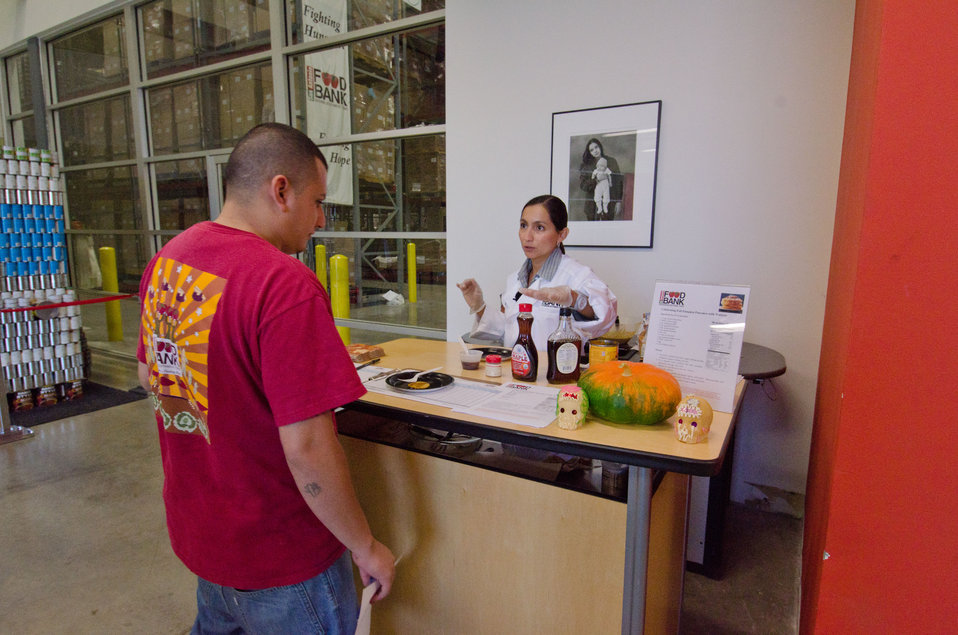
San Antonio Food Bank (SAFB) reception area, in San Antonio TX, on Monday, October 31, 2011, nutrition coordinator Nagelli Rodriguez provided tips, in English and Spanish; and printed information about making healthy, tasty, and easy to prepare food choices when using Supplemental Nutrition Assistance Program (SNAP) benefits. This lesson featured pancakes with pumpkin (or other fall and winter squash) and walnut. The pancakes are made with whole-wheat flour, and served with (low-glycemic) Agave nectar. Traditional pancakes offer starch and sugar, where these offer the flavor boost of pumpkins (vegetables) and walnuts (protein), and whole-wheat flour (high-fiber). The colorful sugar skull on the counter is part of the Mexican culture to honor those who have past, during Day of the Dead (Spanish: Día de Muertos), held on November 1-2. San Antonio Food Bank is a non-profit organization that serves as a clearinghouse by receiving and storing truckloads of donated food, produce, and other grocery. Beyond the glass wall, the first of many multi-tiered pallet racks, full of commodities that come and go through SAFB as they distribute these items to over 500 service agencies that help people in need.
“We couldn’t do what we do without our partnership with USDA’” said President and CEO Eric Cooper. He continues, “We are privileged in partnering (with the USDA) to feeding kids, through the summer, with the Summer Food Service Program, and throughout the year, with the Child and Adult Care Feeding Program (CACFP). Then in our approach to feeding seniors, we partner with USDA in the Commodities Supplemental Food Program (CSFP), and the Senior Farmer’s Market (Nutrition) Program. And then work to bring all our (needy) parties together with our Supplemental Nutrition Assistance Program (SNAP) Outreach. You know, once families have access to food we believe it is important to educate them. Through the support of the SNAP-Education Program we are able to educate them during their time of need. With this comprehensive approach we are really able to get the right food, at the right amount, at the right time, to needy families throughout our community – which allows us to feed the fifty-eight thousand we do, each week.”
SAFB serves 16 counties in Southwest Texas and states, “Nearly one out of every four children and one out of every five adults in Southwest Texas lives in poverty and has difficulty meeting basic nutritional needs.” According to SAFB, sixty-five percent of the people requesting emergency food have children. “Additionally, the senior citizens and those living on a fixed income generally have limited funds for a consistent grocery budget.”
San Antonio is the seventh largest city in the nation with surrounding farms and ranches near its rivers and water supplies. When available they provide fresh surplus produce. Other commodities come from the food industry and manufacturers. The major food brand companies that for various reasons have surplus commodities donate it to SAFB.
The United States Department of Agriculture donates commodities through programs such as The Emergency Food Assistance Program (TEFAP), while Texas farmers supply fresh produce to their Fresh Produce Program.
Public donations come in the form of money, food, volunteer time, and advocacy. Their fleet of trucks to pickup and deliver food as needed.